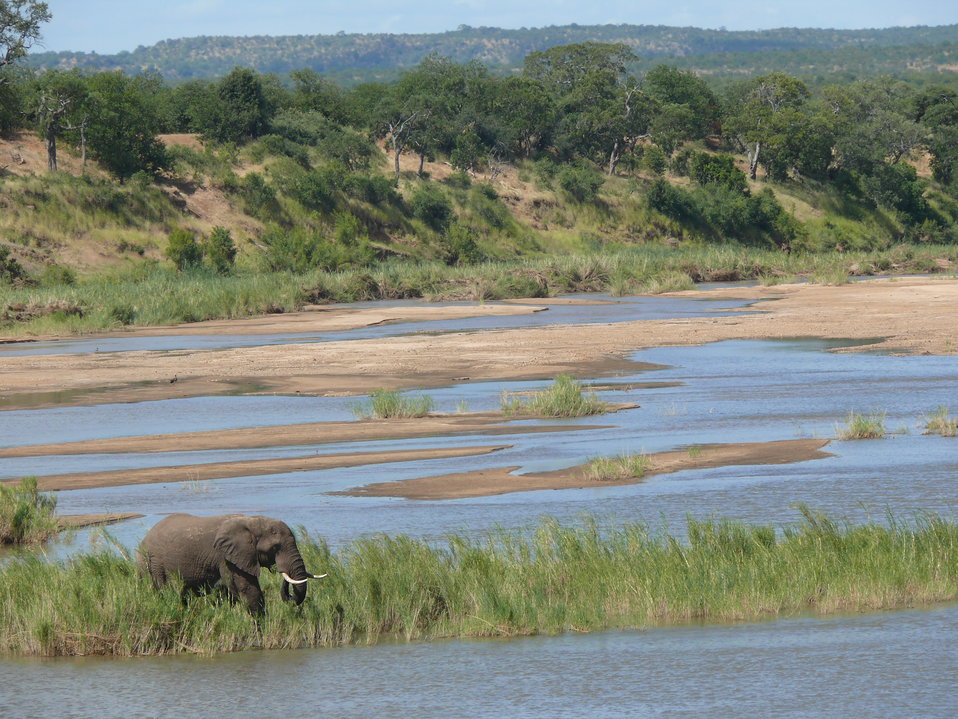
Elephant male tusker

Kruger National Park in South Africa has some of the 'biggest tuskers' (big males) left in Africa.